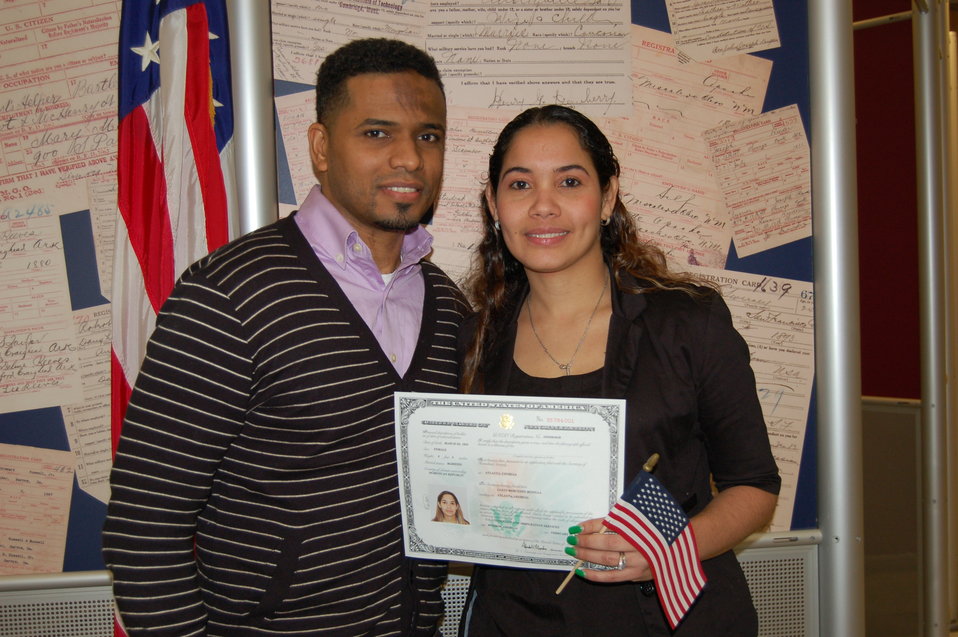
New Citizens